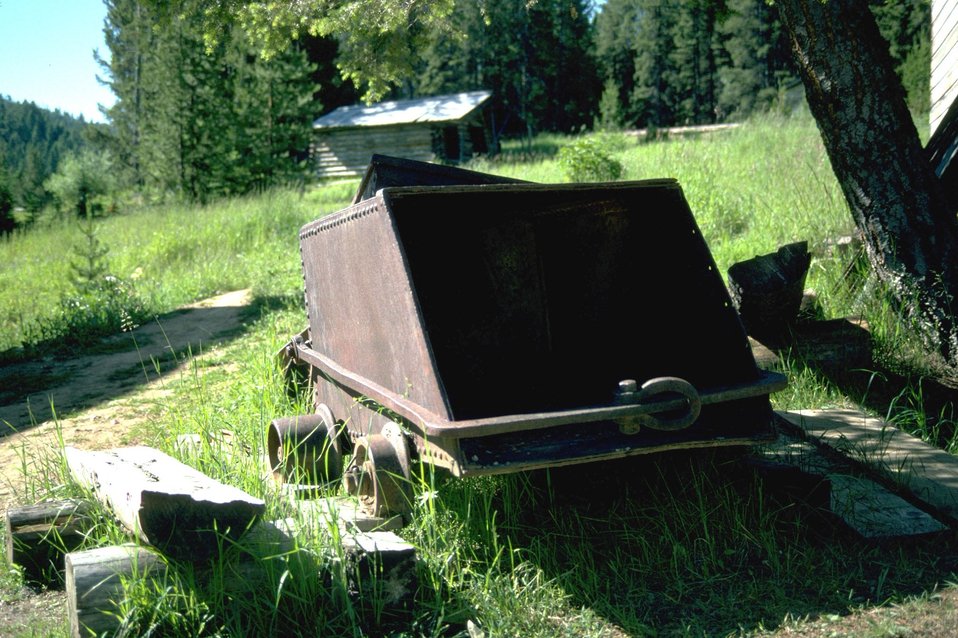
Old mining cart at Garnet Ghost Town